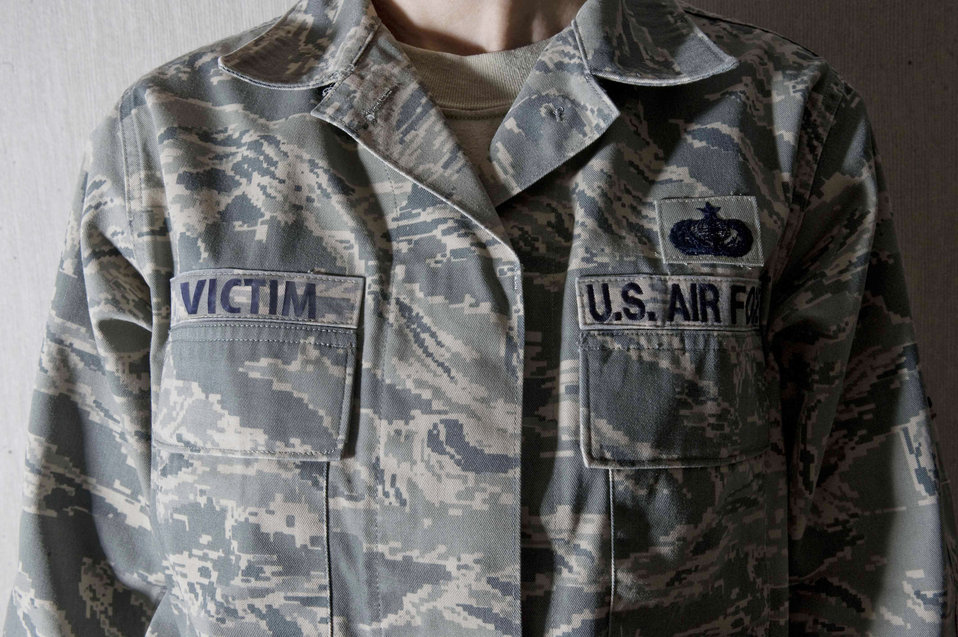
Portrait of a sexual assault

Victims of sexual assault don't wear name tags.